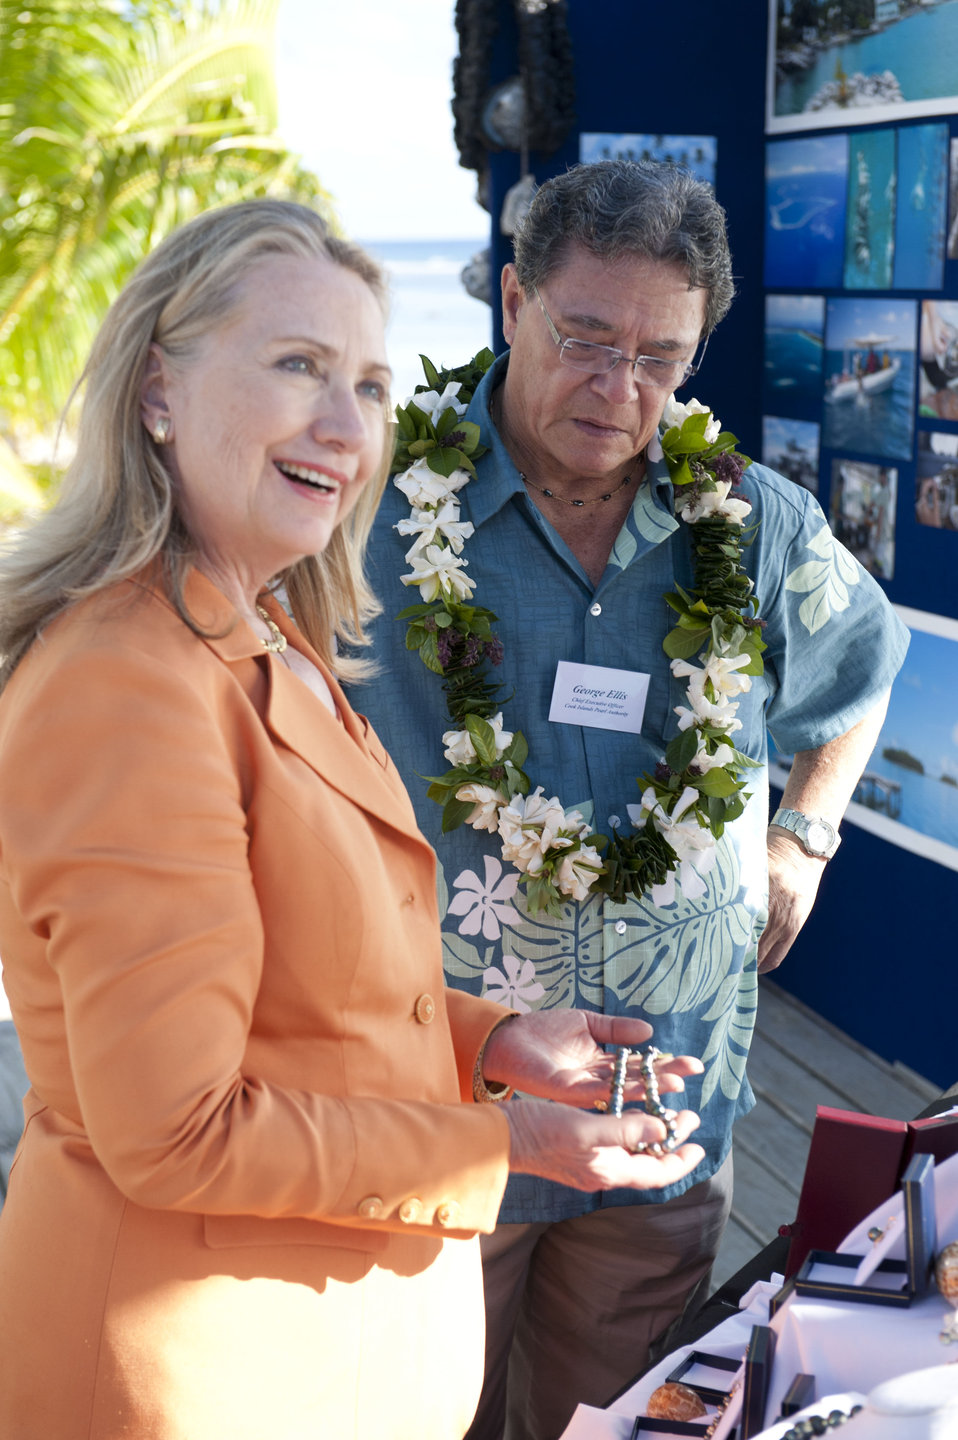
Sustainable Development and Conservation Event in the Cook Islands

George Ellis, CEO of the Cook Island Pearls Authority, shows U.S. Secretary of State Hillary Rodham Clinton examples of Cook Island black pearl jewelry in Rarotonga, Cook Islands, August 31, 2012.